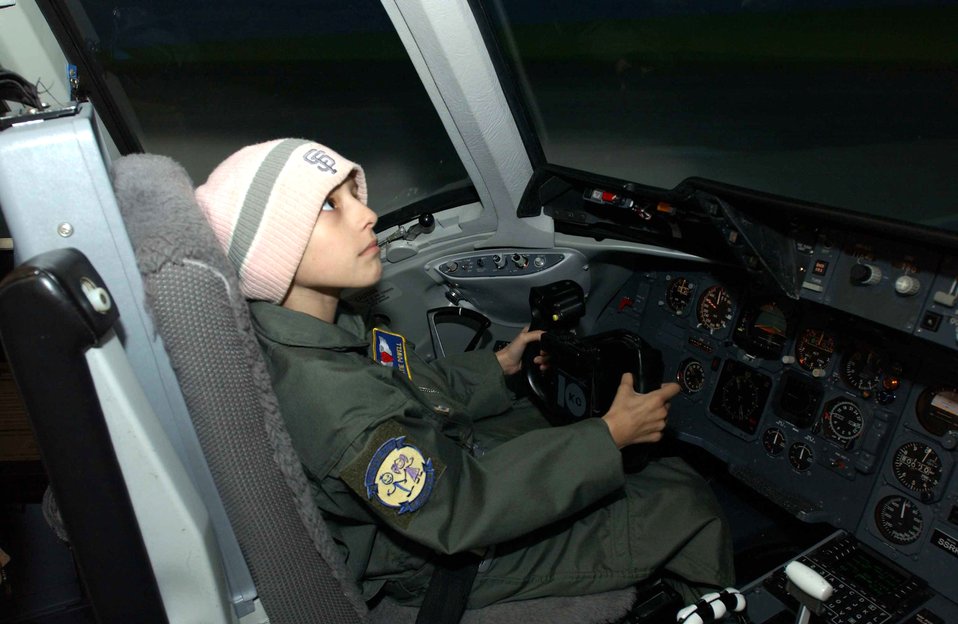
10-year-old girl spends day as KC-10 pilot

Ten-year-old Katie Powell flies a KC-10 Extender simulator at Travis Air Force Base, Calif., as part of the Pilot for a Day program on Friday, May 19, 2006. The program provides wish-fulfillment opportunities to local children with life-threatening diseases. Katie is fighting Ewing’s Sarcoma, a rare bone cancer. She is the daughter of Senior Master Sgt. Chris Powell, 60th Operations Group.